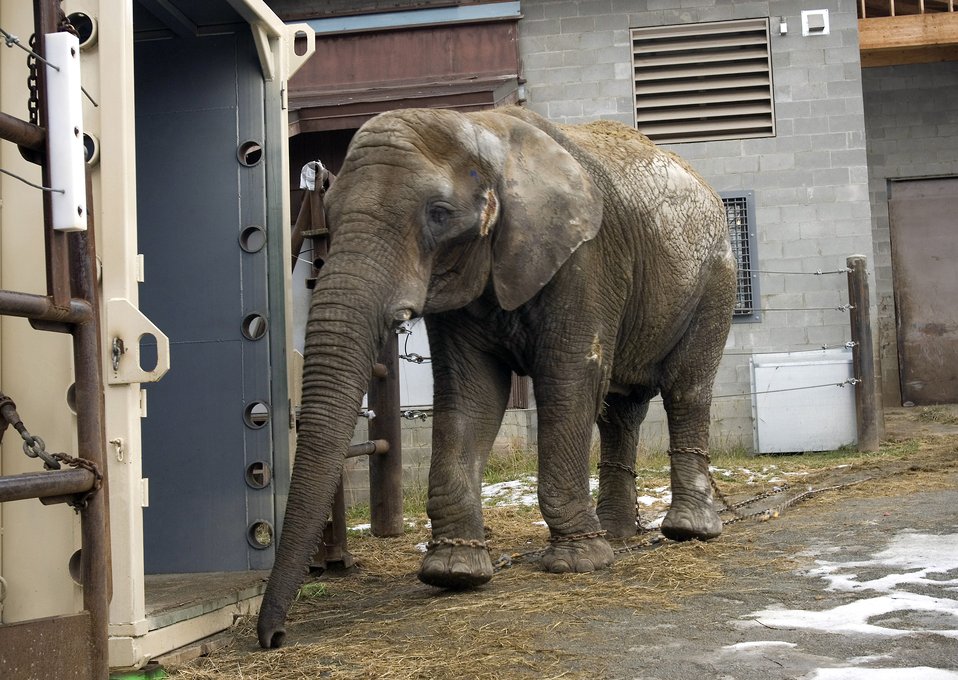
Operation Maggie Migration

Maggie, Alaska's only elephant, is being relocated from the Alaska Zoo in Anchorage to the Performing Animal Welfare Society sanctuary in California. A C-17 Globemaster III from Elmendorf Air Force Base will transport Maggie Nov. 1. in a crate specifically designed to transport elephants.